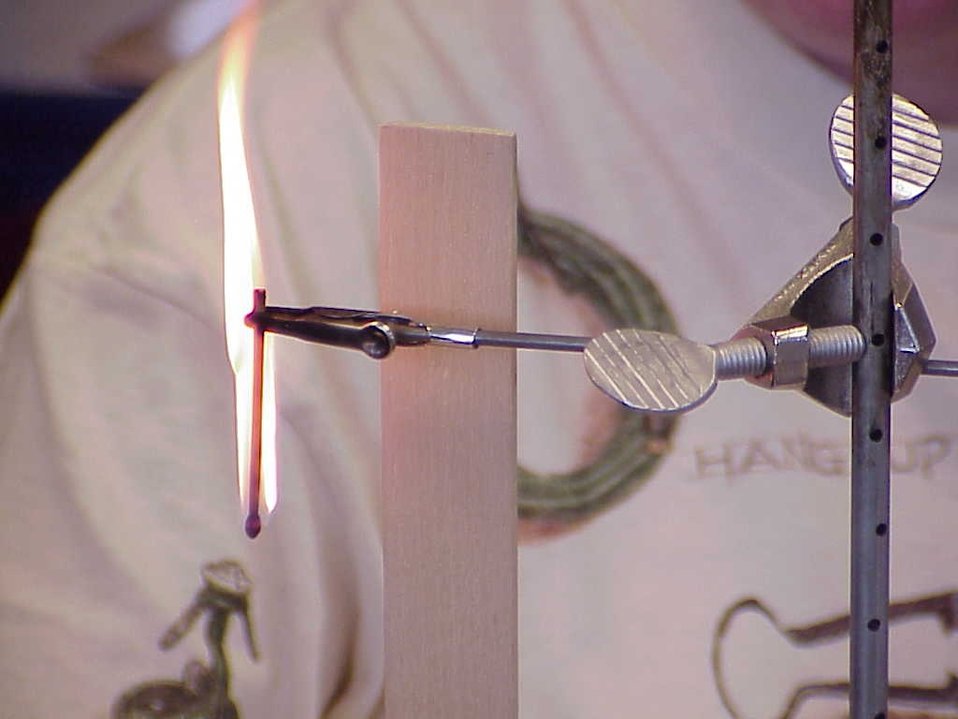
Environmental Education Fire Workshop Timberline High School Fall 2000